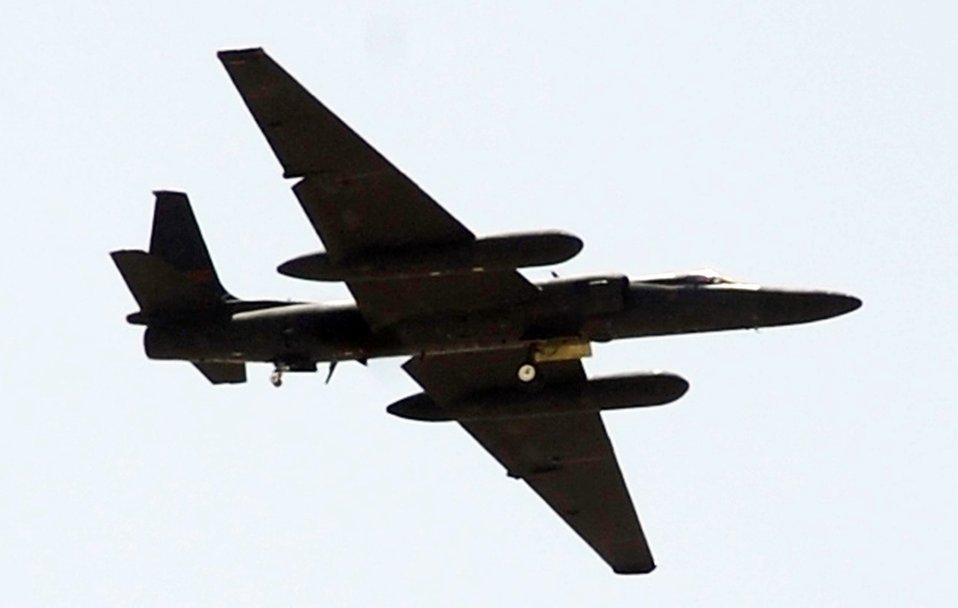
U-2 Dragon Lady heritage spotlight

A pilot guides a U-2 Dragon Lady through the air en route to a mission in the U.S. Central Command area of responsibility from an air base in Southwest Asia April 2, 2010.